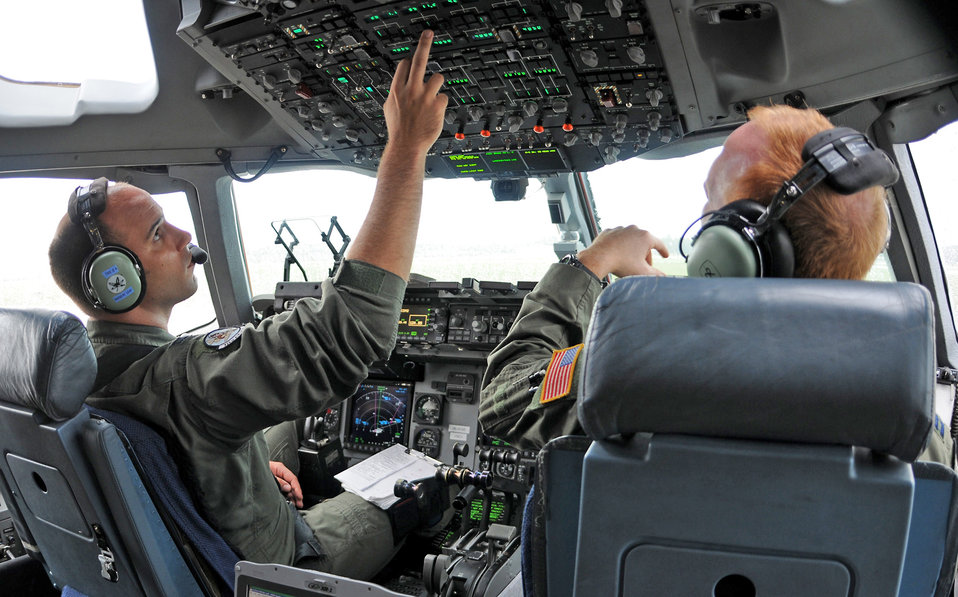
Dover reservists work to form Canadian sister squadron program

Capt. Dan Zappe (left) and Capt. Steve Churchill, C-17 Globemaster III pilots with the Air Force Reserve Command's 512th Airlift Wing at Dover Air Force Base, Del., fly a training mission during a visit to 8 Wing at Canadian Forces Base Trenton, Ontario. Ten reservists from Dover flew to the Canadian base to spend three days with Royal Canadian Air Force members to forge a partnership and identify future training opportunities for flying, aerial port operations, airlift control and maintenance procedures.